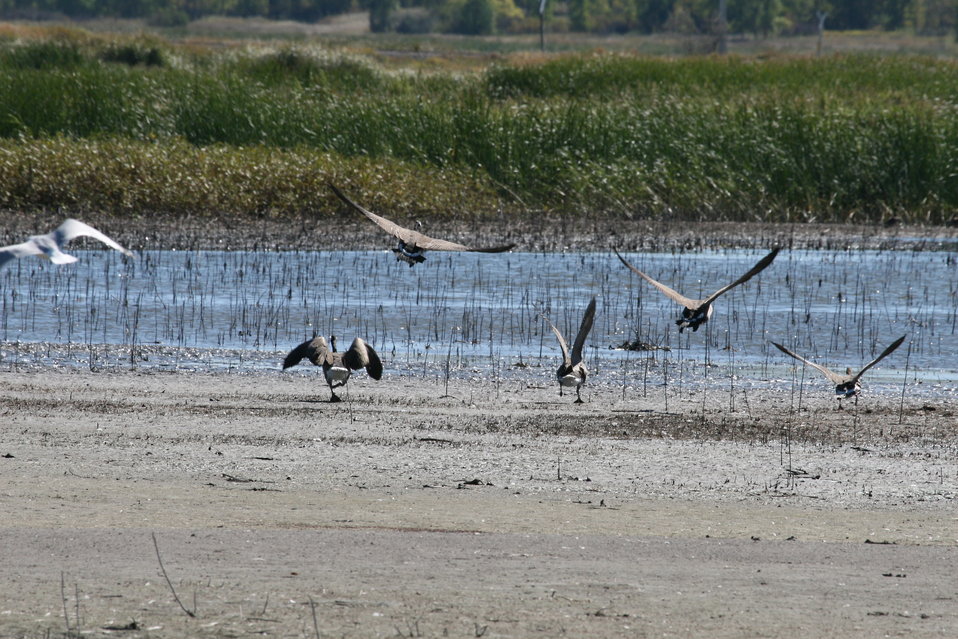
Canada Geese frequent the Refuge year round, but soon the fall migration will begin and the lake will be full of geese!